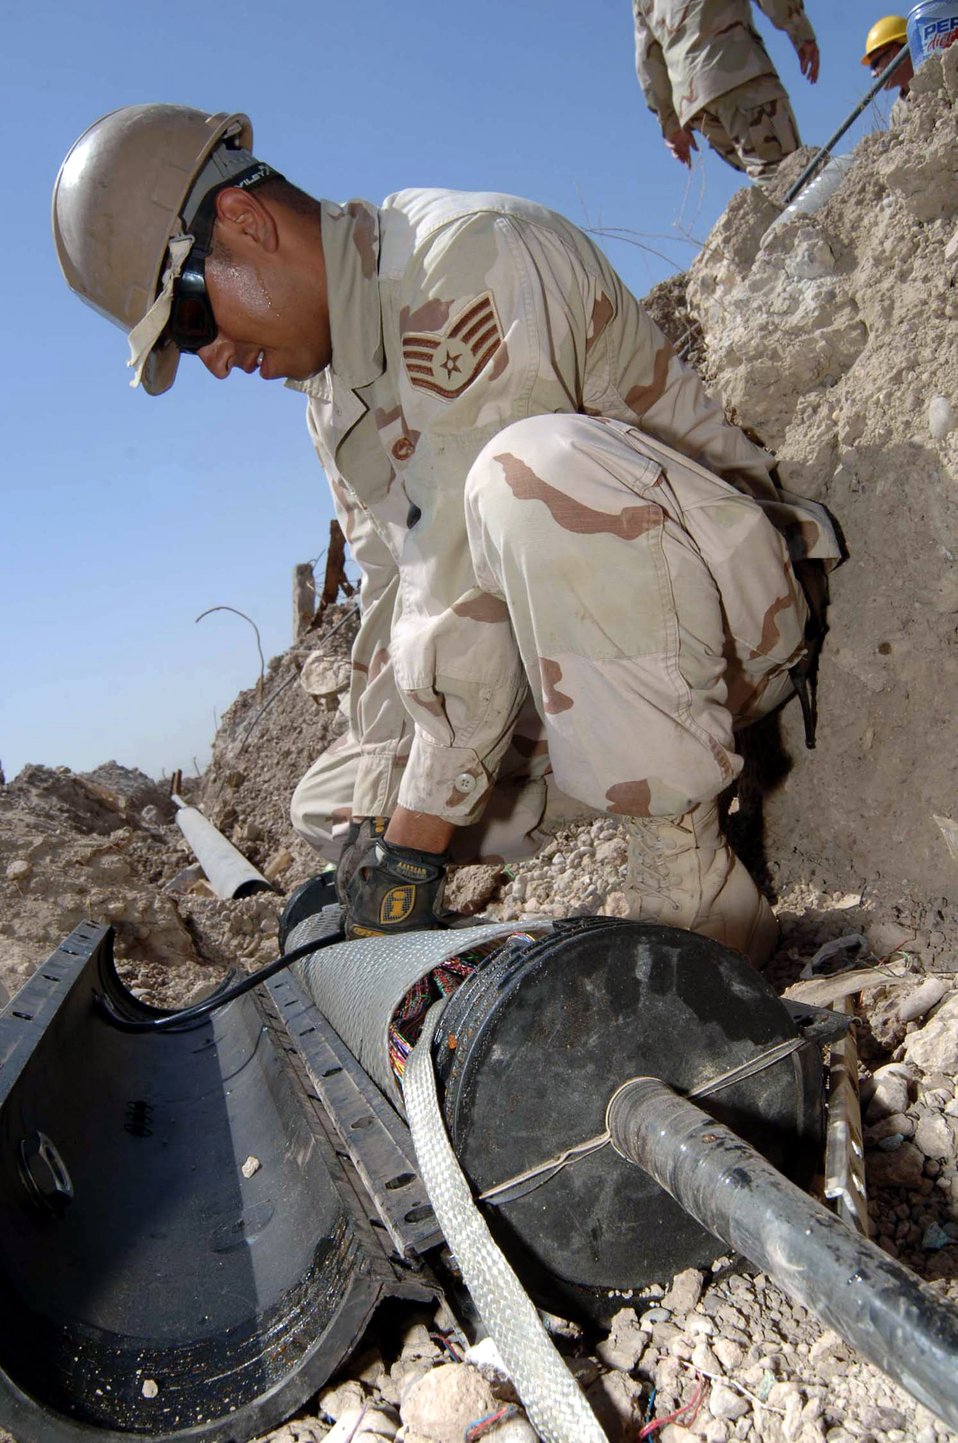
Cable techs bring copper, fiber to table

Staff Sgt. Erik Castilleja packs up 400 phone wires in a splice box to be buried at Sather Air Base, Iraq. Sergeant Castilleja is a cable and antenna technician assigned to the 447th Expeditionary Communication Squadron.